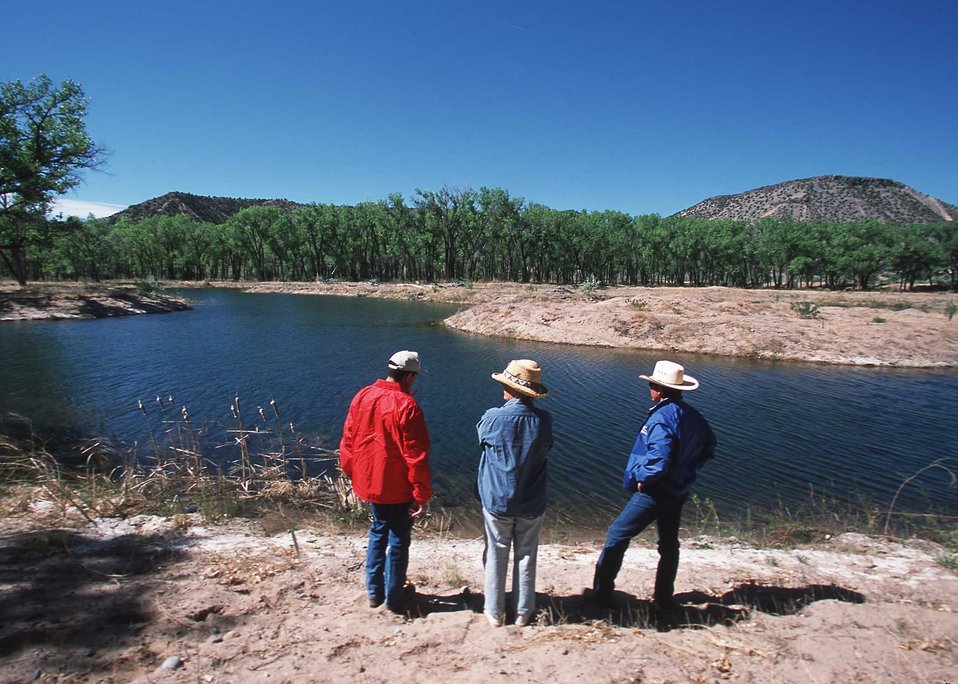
Wetland pond in Sante Fe County installed with NRCS assistance.